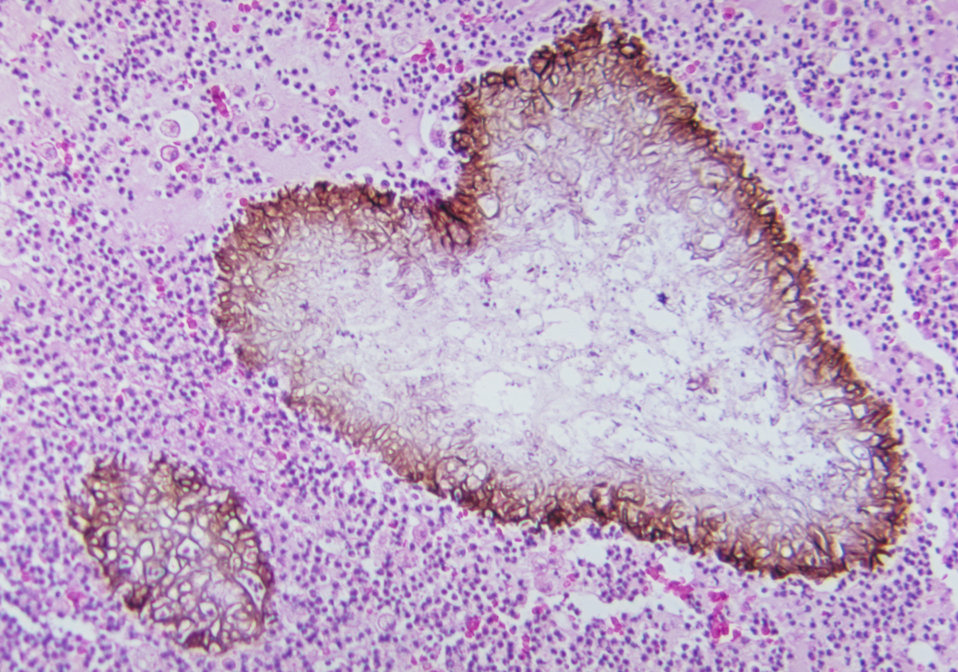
Note the histopathologic changes seen in black grain eumycotic mycetoma of subcutaneous tissue due to C. geniculata.